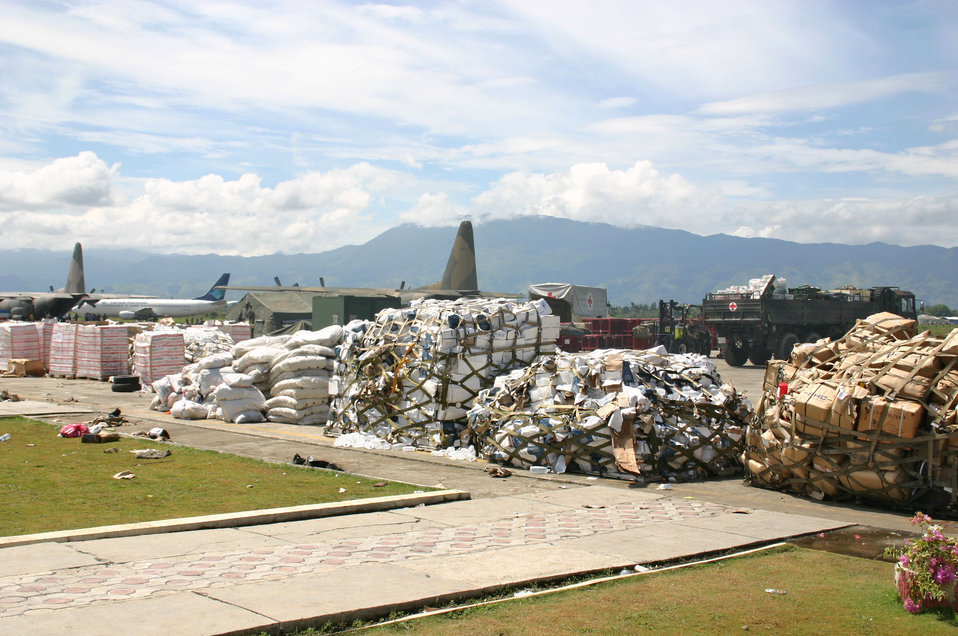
Relief supplies brought to Banda Aceh

BANDA ACEH, Indonesia -- Large amounts of relief supplies line the side of the runway here Jan. 10, and aircraft and vehicles from a variety of countries sit on the tarmac. More than 18,000 Marines, Sailors, Airmen, Soldiers and Coast Guardsmen with Combined Support Force 536 are working with international militaries and nongovernmental organizations to aid the affected people of Thailand, Sri Lanka and Indonesia after a magnitude 9.0 earthquake Dec. 26 triggered devastating tsunamis. International efforts to minimize suffering and mitigate loss of life continue as the CSF 536 servicemembers provide humanitarian assistance supporting Operation Unified Assistance.